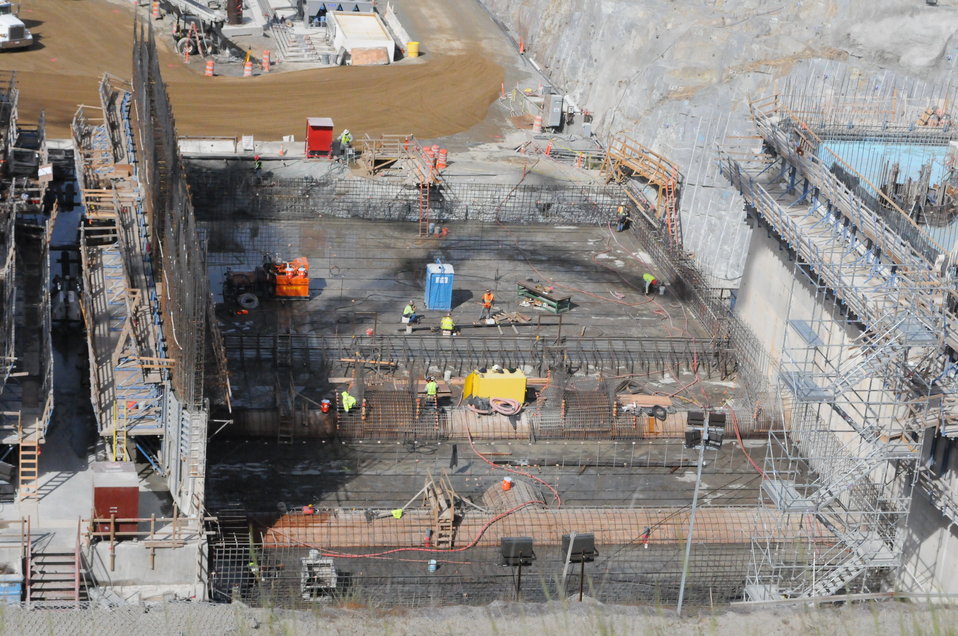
Placing Steel Rebar

Contractors working for the Sacramento District construct the support system for the rising Folsom Dam auxiliary spillway on March 14. The control structure—essentially a second dam—will stand as tall as the Statue of Liberty upon completion, estimated in October 2017, and will help reduce the risk of flooding in the Sacramento region.